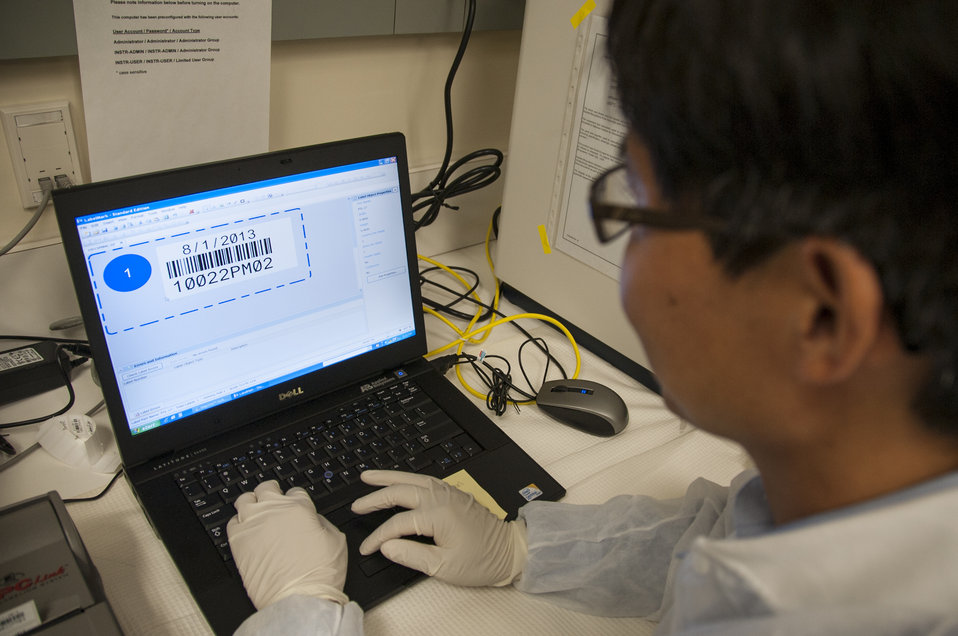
Blood Research: Saving Lives (8413)

ason Liu, Ph.D., la laboratory chief at FDA’s Office of Blood Research and Review, creates a barcode for labeling a blood sample. FDA is responsible for the safety of our nation’s blood supply and is at the forefront of evaluating and encouraging innovative technologies for protecting it.

Read this Consumer Update to learn more: Advances in Saving Lives with Blood